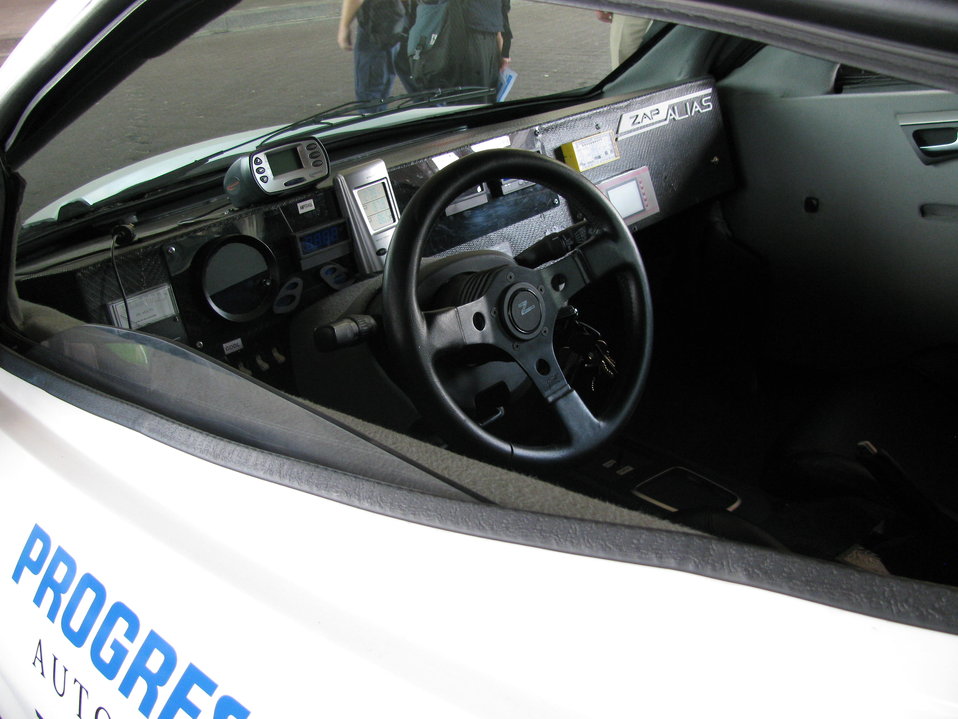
X Prize 064